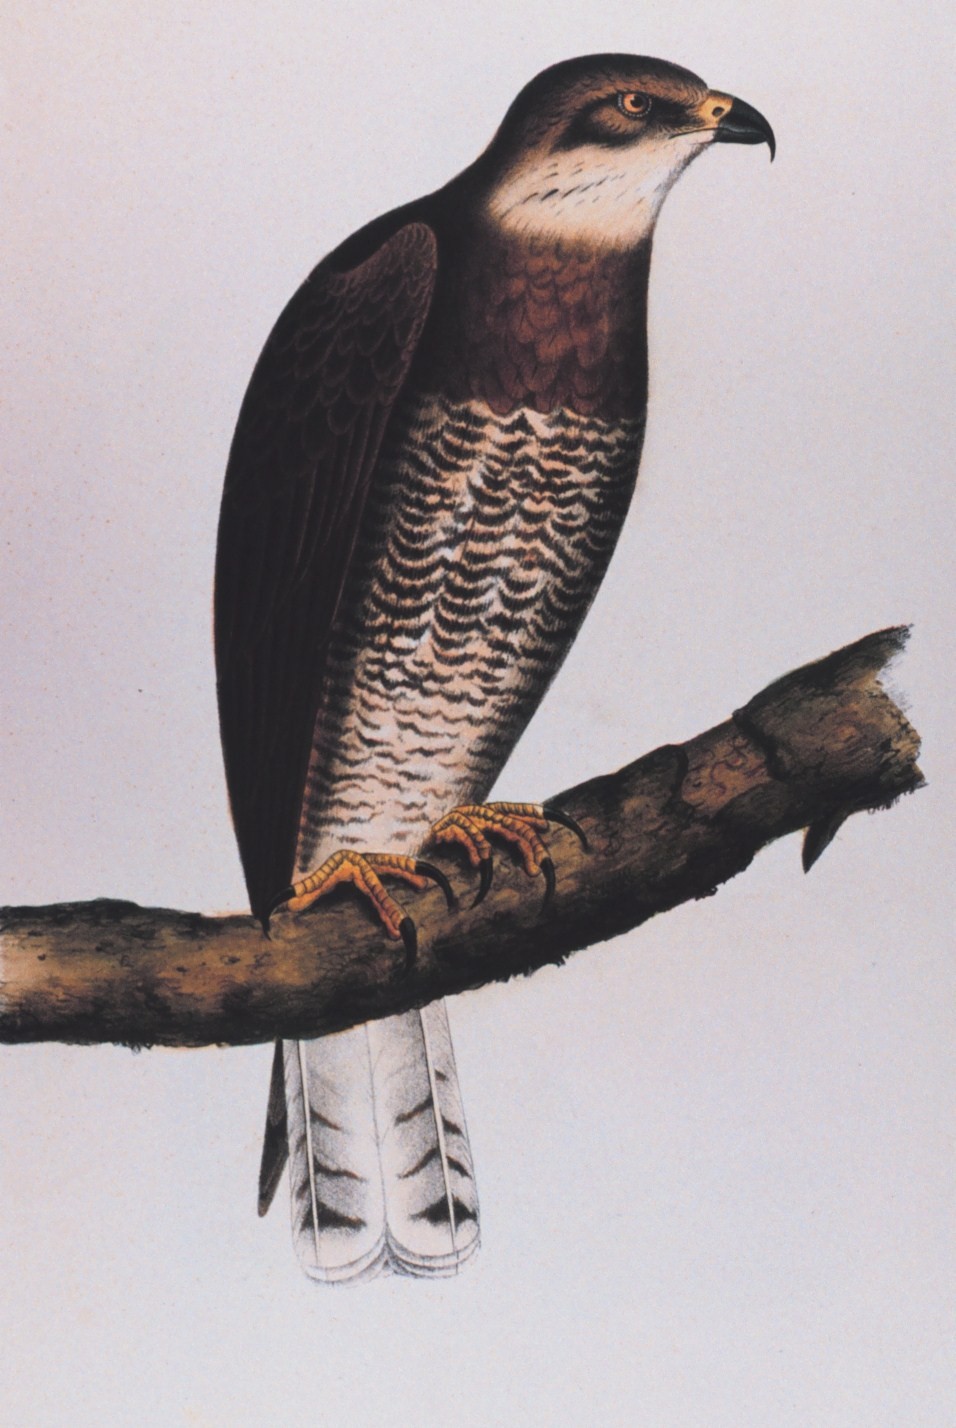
Buteo swainsoni. Swainson's Buzzard, a variety of hawk. This image was included in: Reports of Explorations and Surveys .... Volume X. 1859. Plate XII. P. 16 of U. S. Pacific Railroad Explorations and Surveys 38th,39th, 41st Parallels. Call Number F593 .U58 1855 .